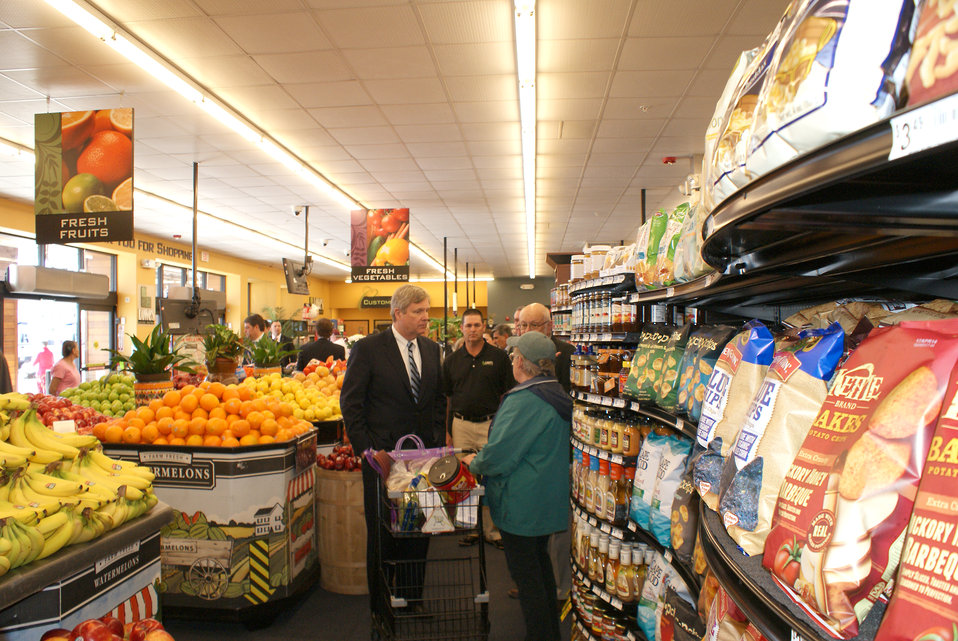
Agriculture Secretary Tom Vilsack speaks with customers at Lowe's Corner Market in Albuquerque, NM on Mar. 10, 2014.